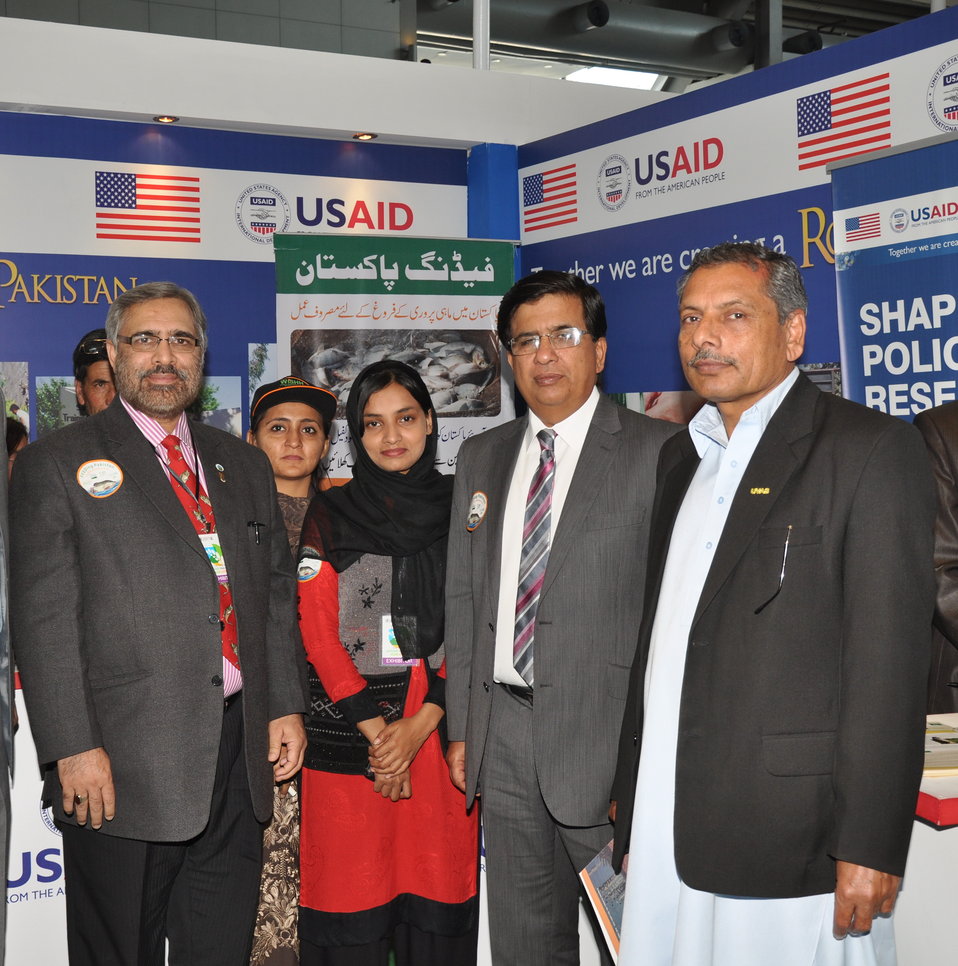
FEEDing Pakistan

VC and Dean VUAS visited booth and Aquaculture Associate (Female) and RSN JANJUA, briefed them about progress of Tilapia program